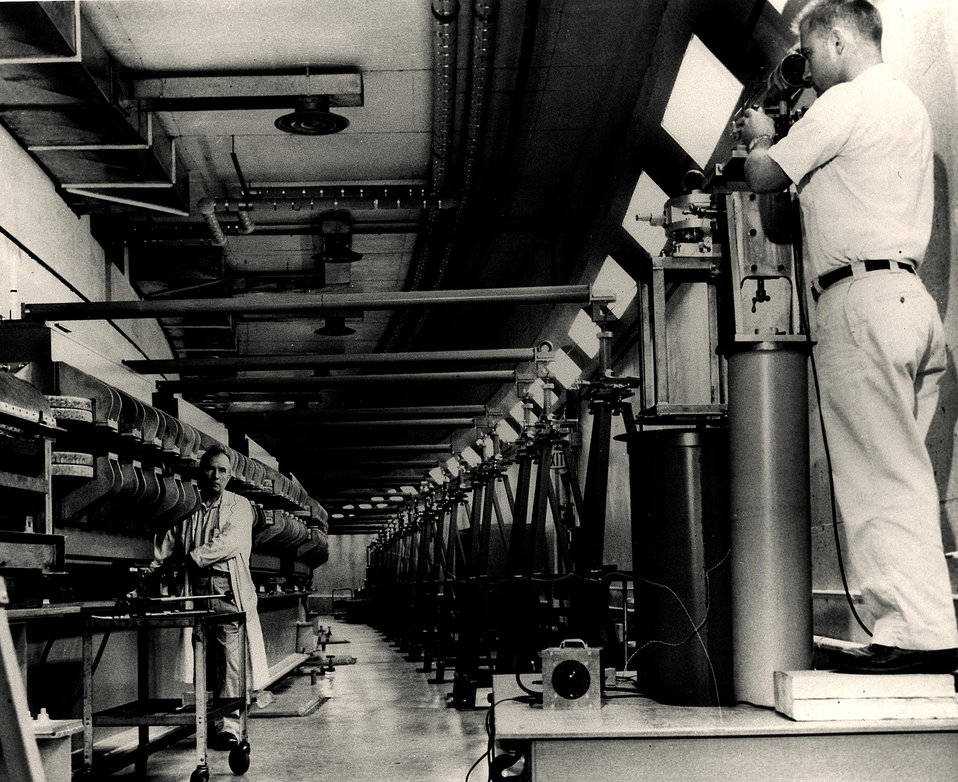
Positioning magnets inside the tunnel of the Alternating Gradient Synchrotron, Brookhaven National Laboratory.